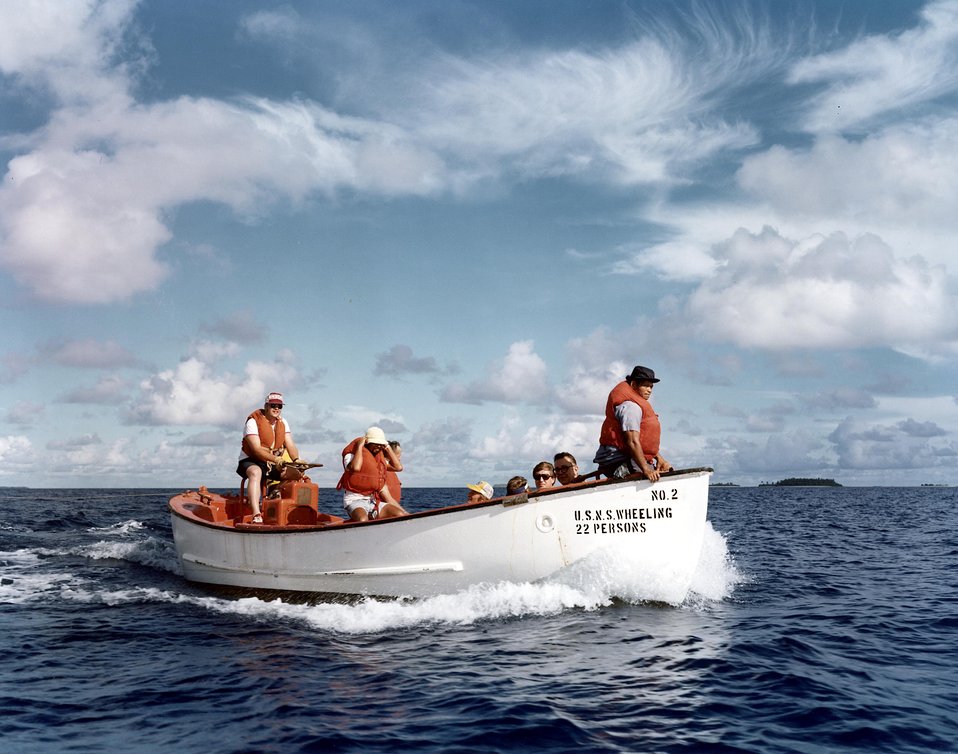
Windsor, Conn...The Power Systems Group of Combustion Engineering, Inc. today announced that Unit 2 at the Millstone Nuclear Power Station, Waterford Conn. has entered commercial service for Northwest Utilities.